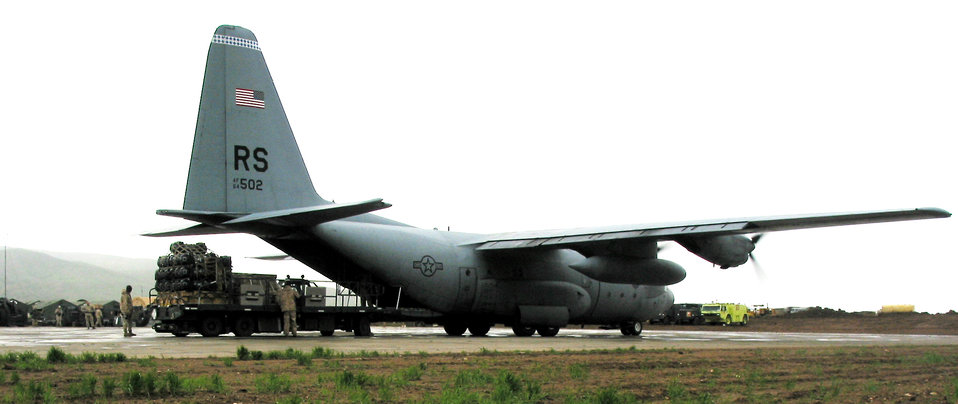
Hercules in Iraq

OPERATION IRAQI FREEDOM -- A C-130 Hercules lands at an airfield in northern Iraq on April 8. The aircraft and crew from the 37th Airlift Squadron at Ramstein Air Base, Germany, delivered more than 14,000 pounds of supplies to support Operation Iraq Freedom.